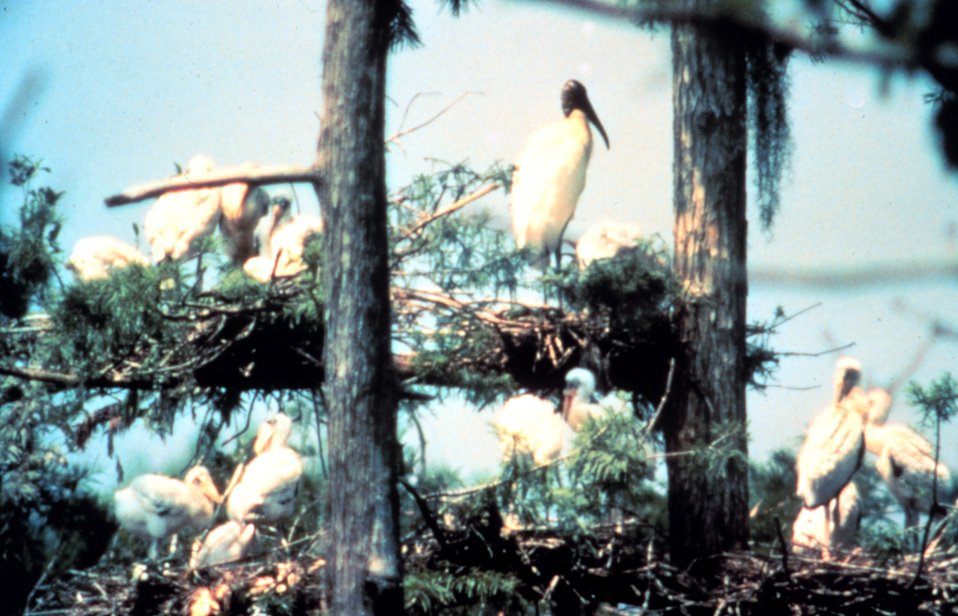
ACE Basin National Estuarine Research Reserve. A wood stork nesting area.